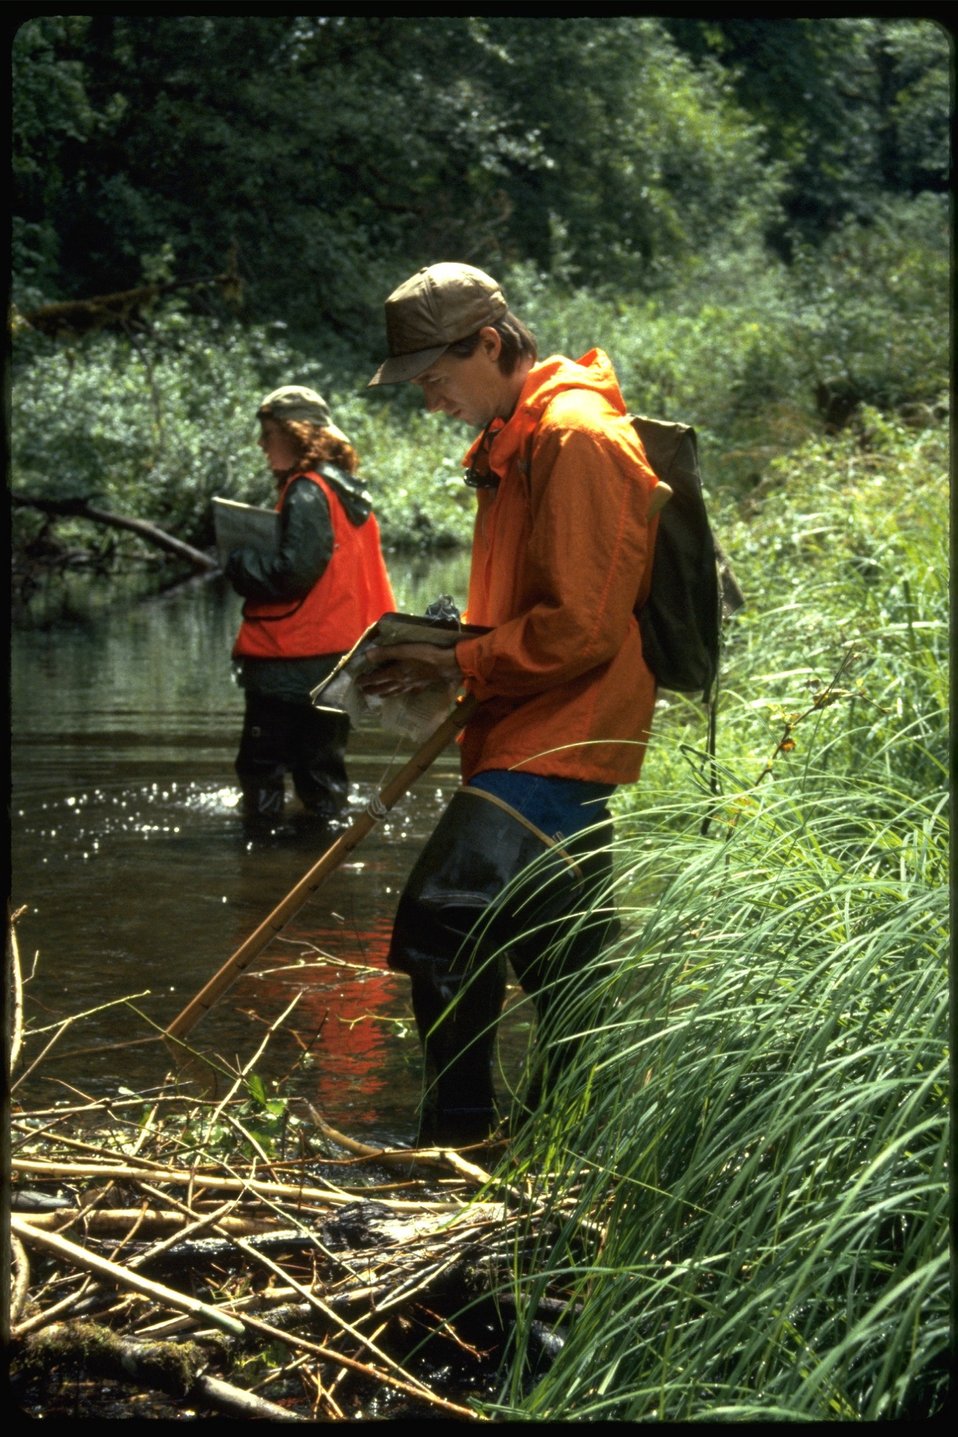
Sarah and Russ surveying Smith Creek during habitat study.